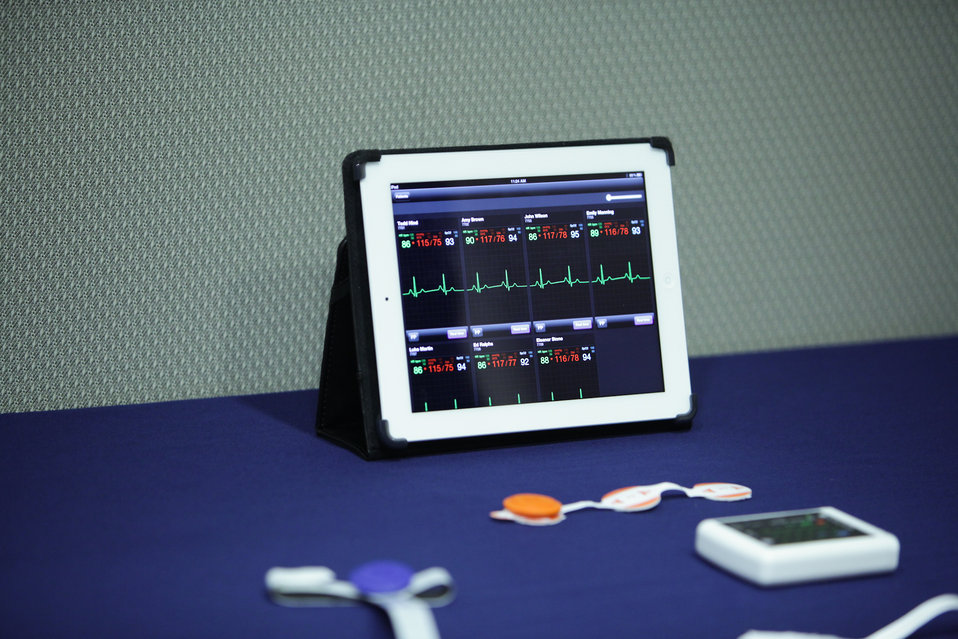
Device Using MBAN Tech

Device using MBAN technology demoed at George Washington University Hospital in Washington, DC.

May 17, 2012.